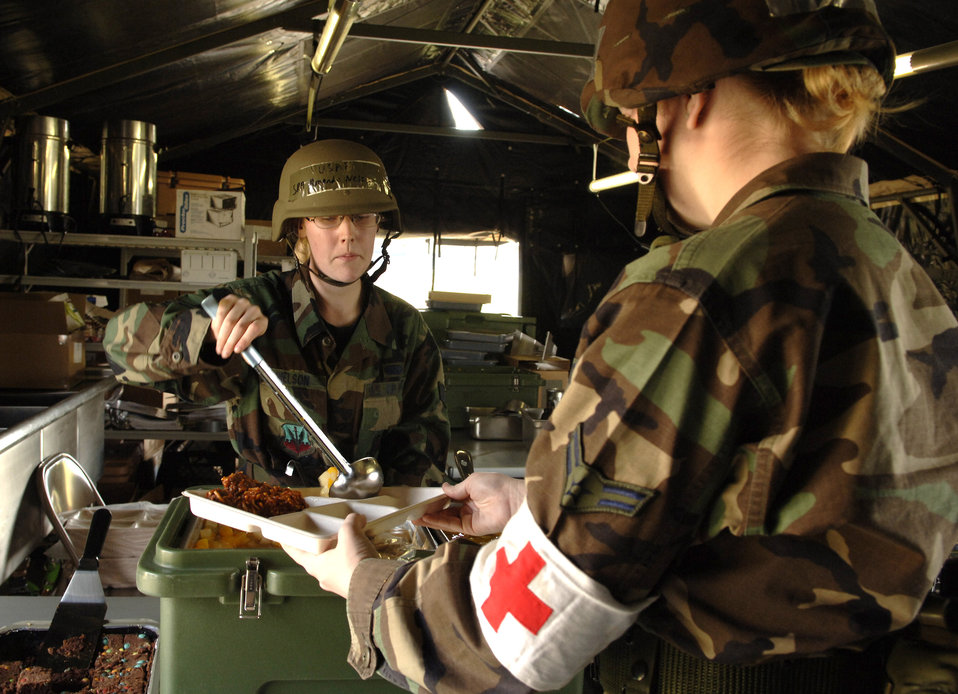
Hot meal

Senior Airman Amanda Nelson of the 917th Wing serves food during the conventional operational readiness exercise, or CORE, Tuesday, March 7, 2006, at Barksdale Air Force Base, La. The CORE is a test of the wing's warfighting capabilities.